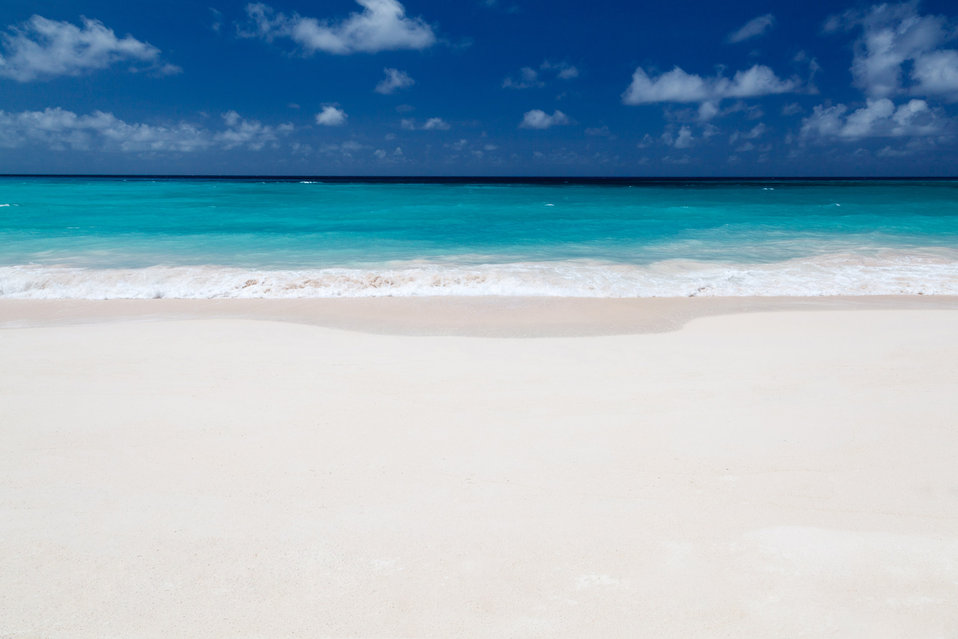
Perfect white beach

White beach and blue sky in barbados.